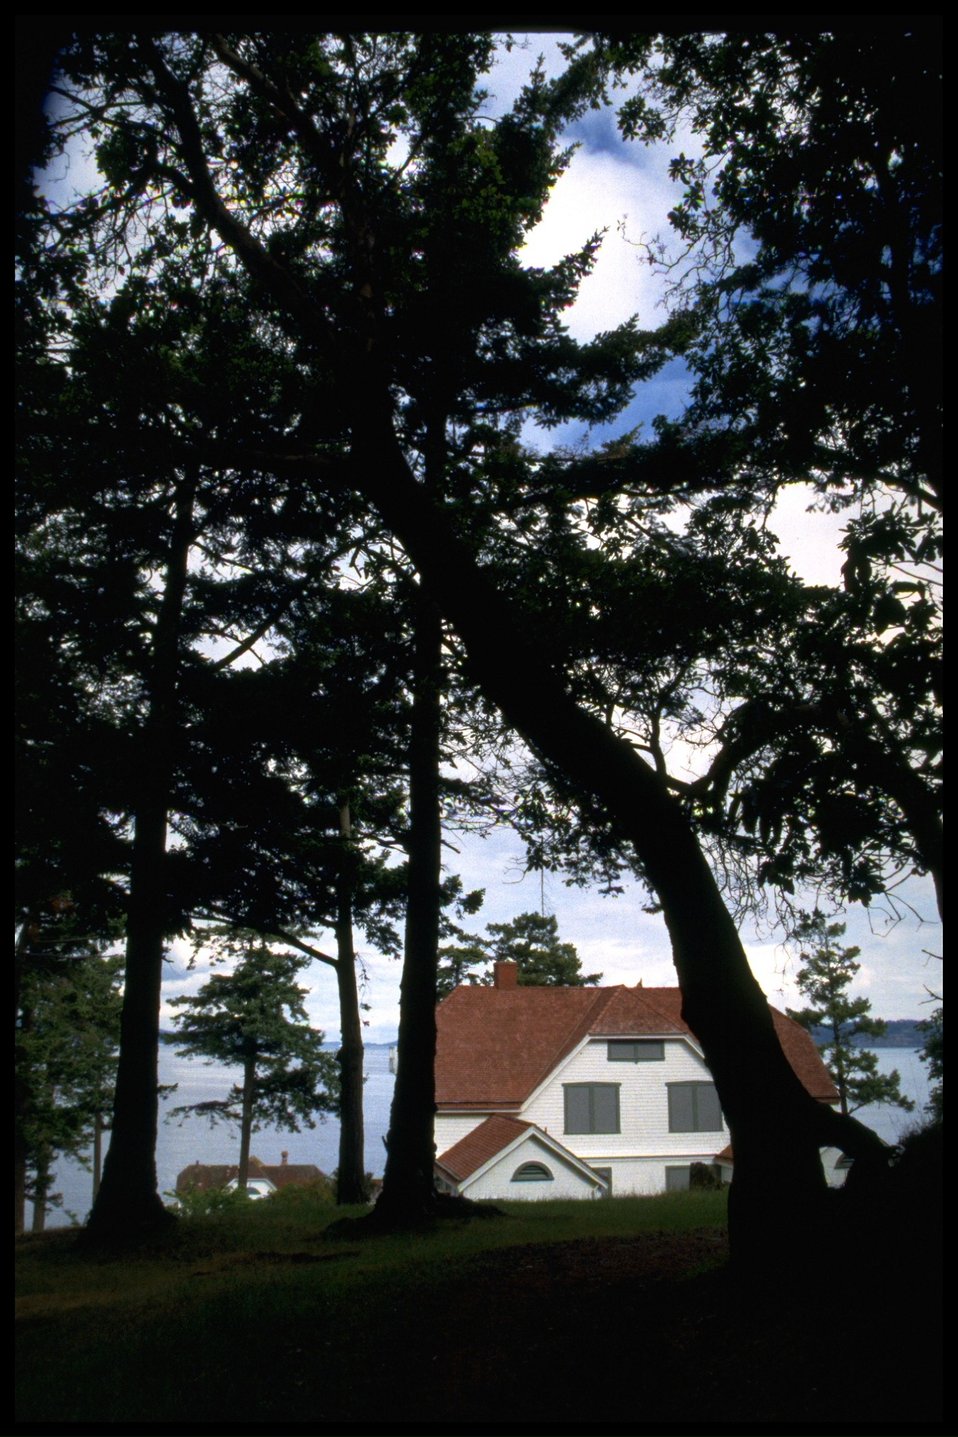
Living quarters at Turn Point. One in a series of ten shots of the living quarters.